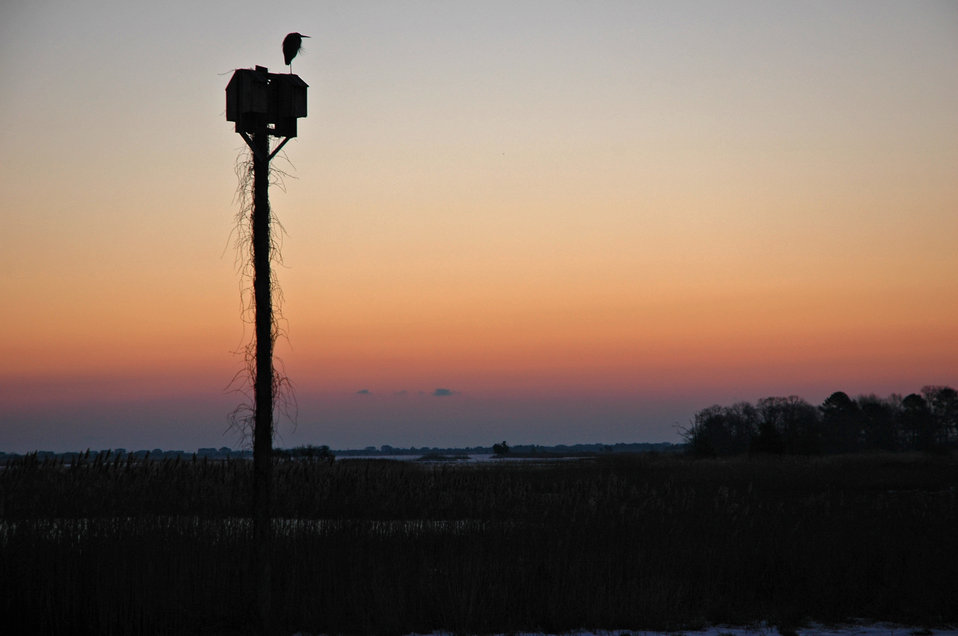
Great blue heron at sunset at Prime Hook National Wildlife Refuge.